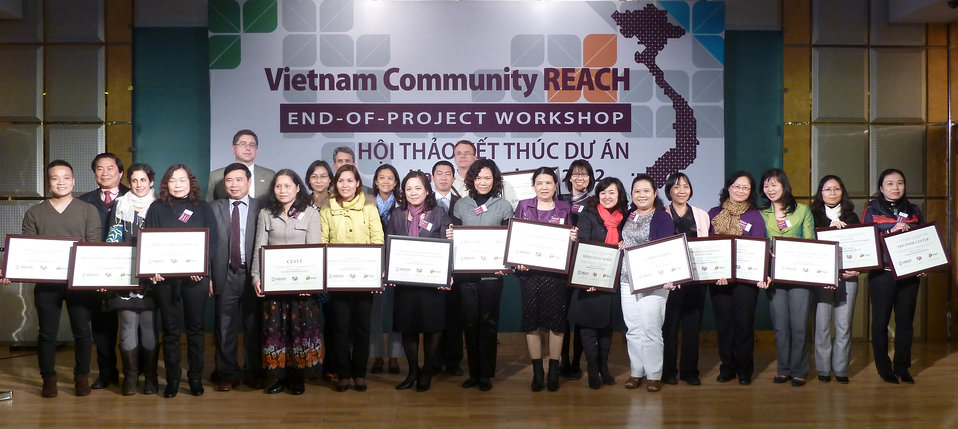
USAID, PEPFAR, and Pact award certificates to local and international partners for their work in addressing HIV in Vietnam

Community REACH project close-out with USAID and implementing partner, Pact